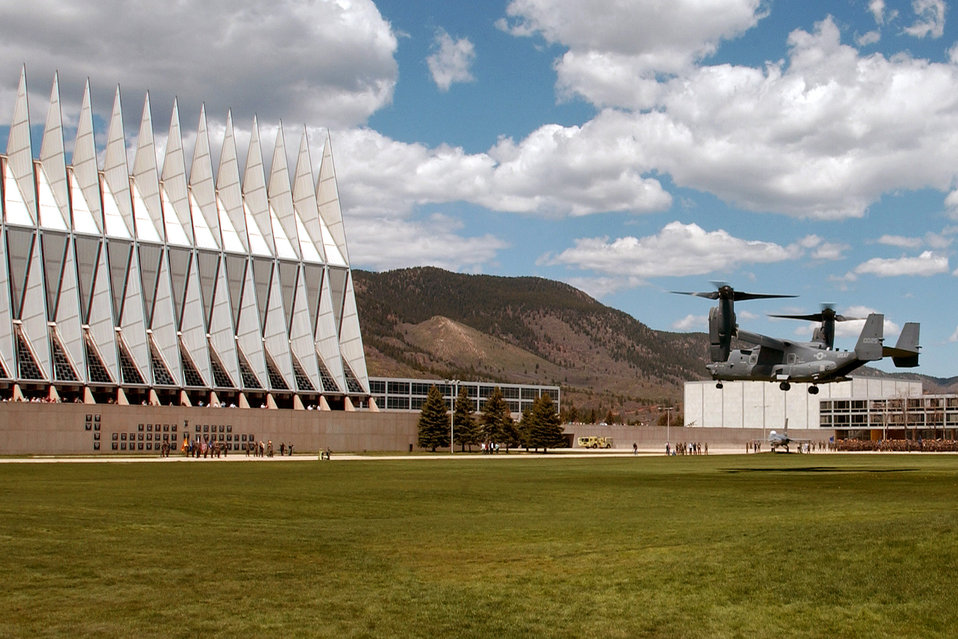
Osprey comes for a visit

A CV-22 Osprey prepares to land at the U.S. Air Force Academy May 11. Cadets in the Department of Aeronautical Engineering's High-Performance Computing Research Center contributed to making this aircraft an operational reality through their research in computational fluid dynamics. The famed Academy chapel is in the background.